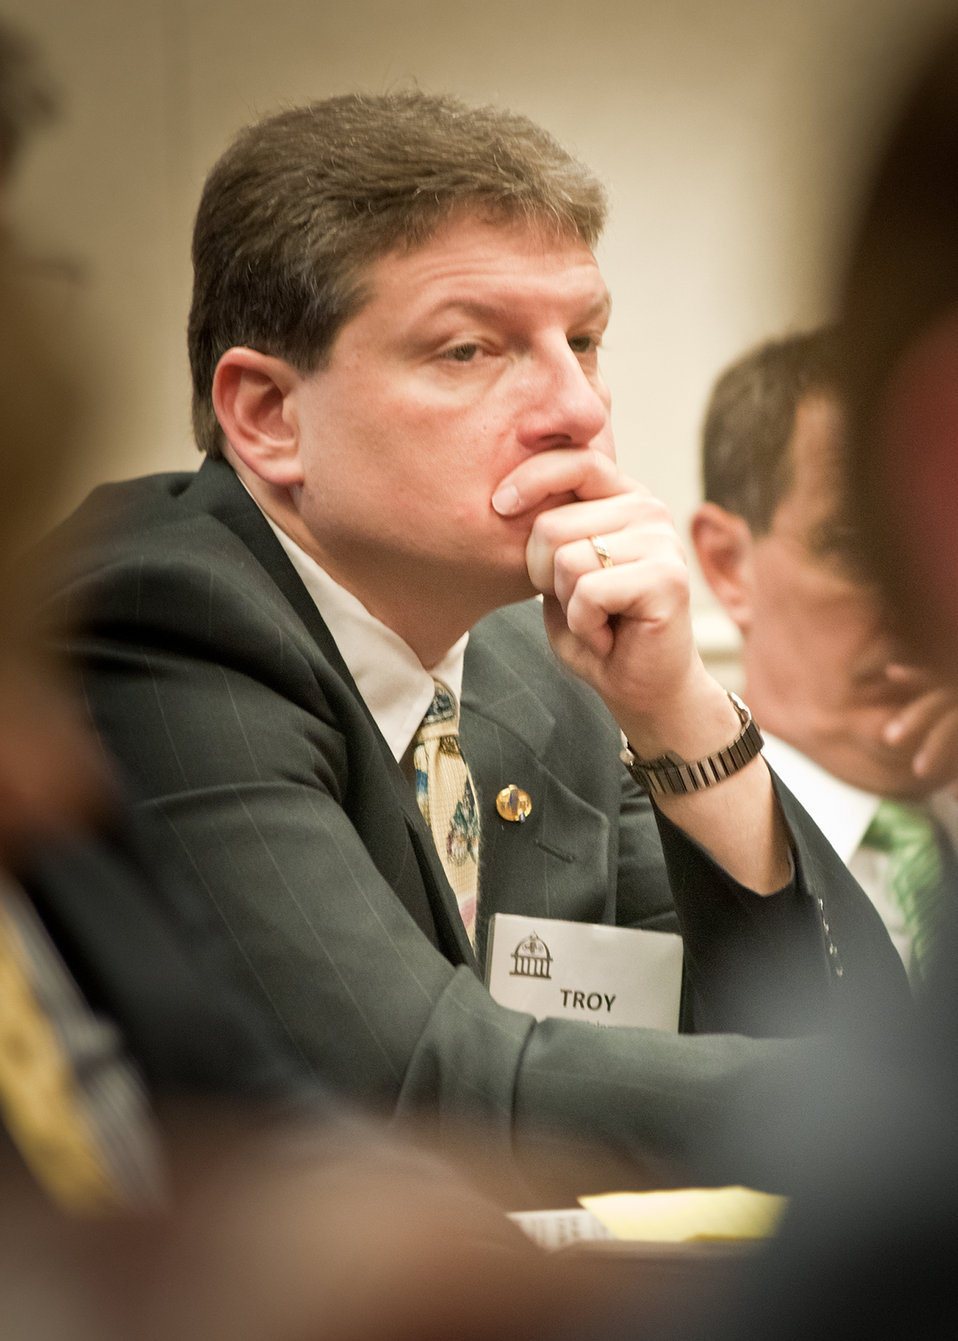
Troy Leininger, KICD, AM&FM, Spencer, Iowa a member of the National Association of Farm Broadcasters listens to Agriculture Secretary Tom Vilsack answer questions posed by members during a session at the United States Department of Agriculture during the annual National Association of Farm Broadcasters visit to Washington, DC, Tuesday, May 5, 2011.